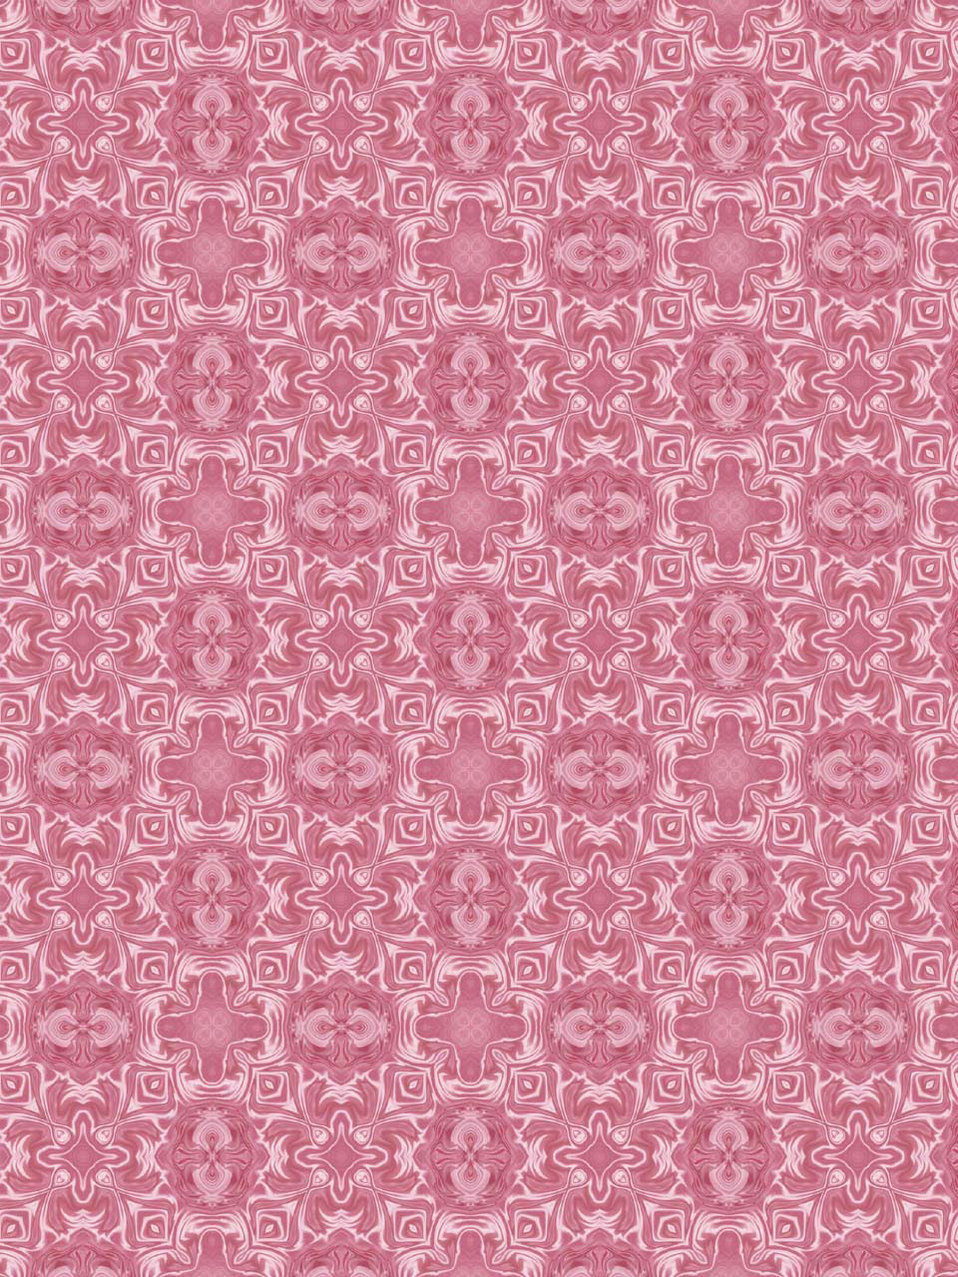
Pink and white background

Pink and white shapes.